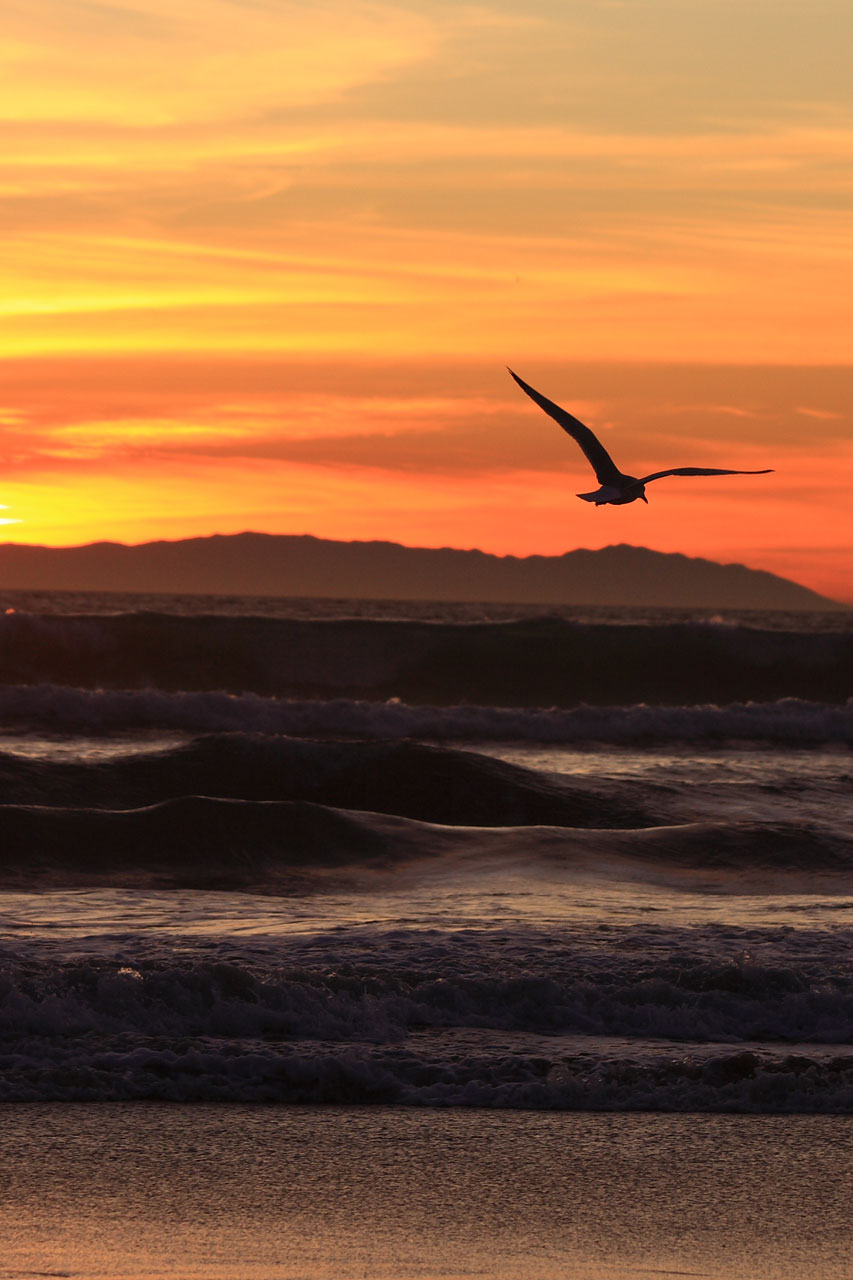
California sunset on new year's eve

Sunset at huntington beach pier, huntington beach, ca, on 31 december 2009.